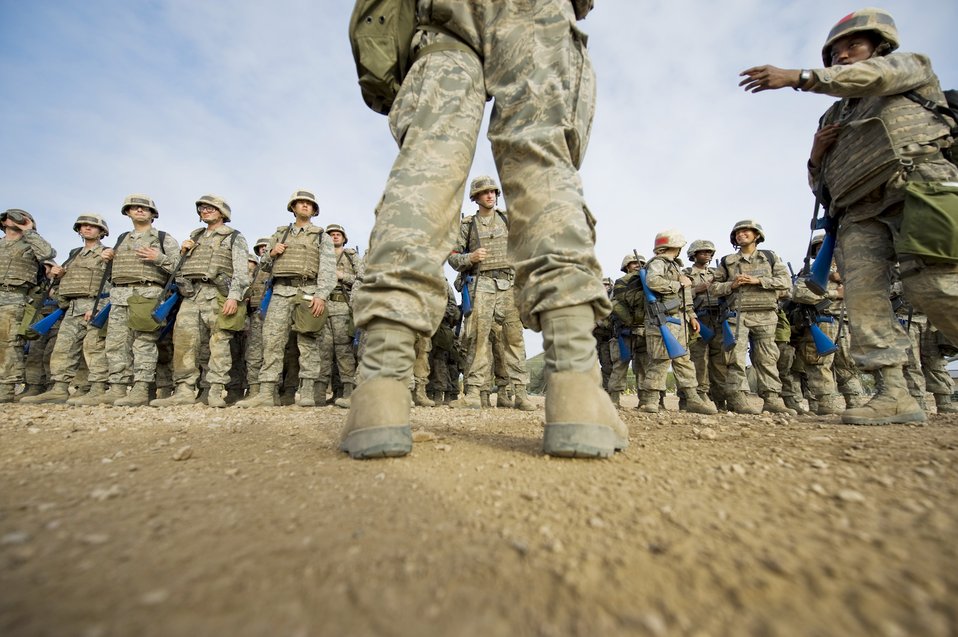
Trainees conquer the BEAST

Basic trainees wait for the military training instructor after completing an exercise at the Basic Expeditionary Airman Training, or BEAST, Sept. 2, 2009, at Lackland Air Force Base, Texas. The BEAST introduces Airmen to the joint expeditionary concept and immerses them in deployment scenarios.